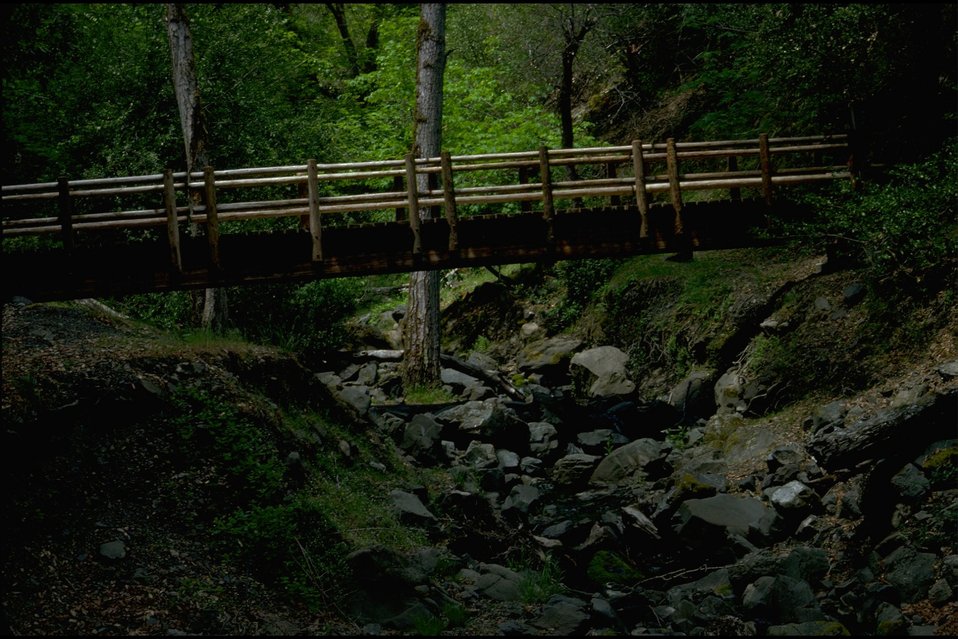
Rogue River Trail - Bridge on North side of river, wild section.